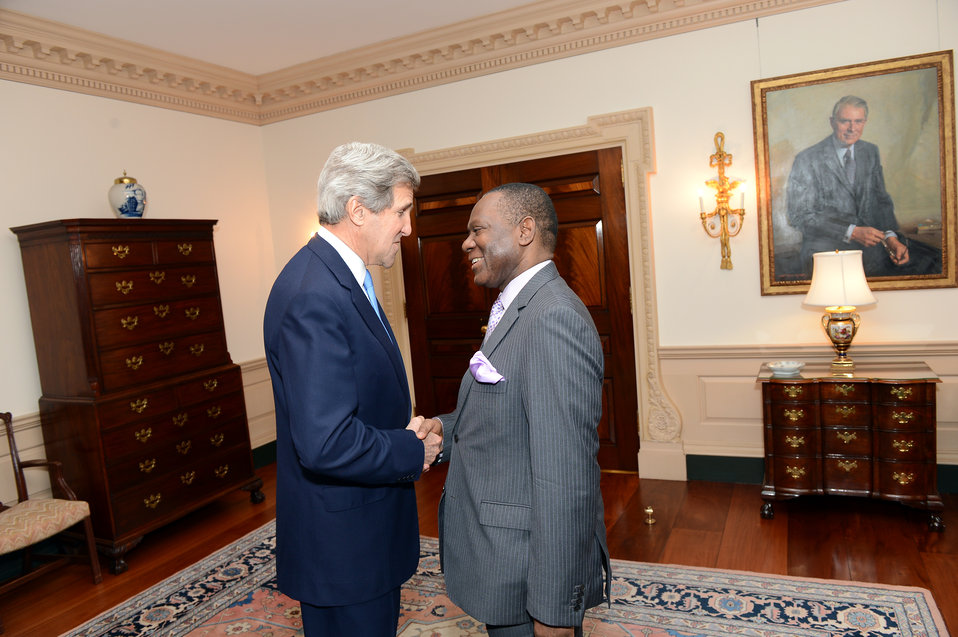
Secretary Kerry Shakes Hands With Nigerian Foreign Minister Ashiru

U.S. Secretary of State John Kerry shakes hands with Nigerian Foreign Minister Olugbenga Ashiru before their bilateral meeting at the U.S. Department of State in Washington, D.C., on April 25, 2013.